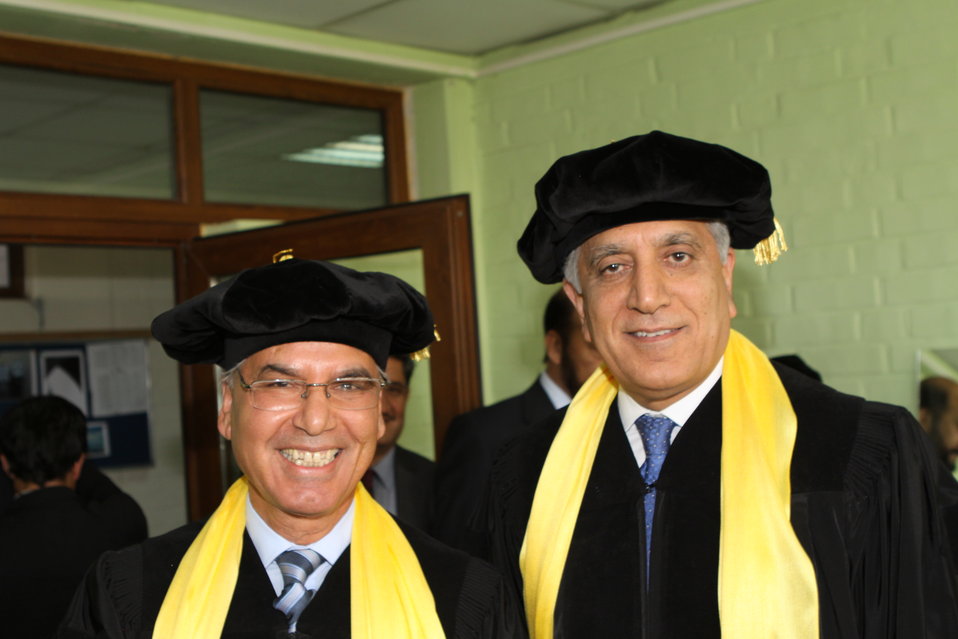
100526 AUAF Graduation 080